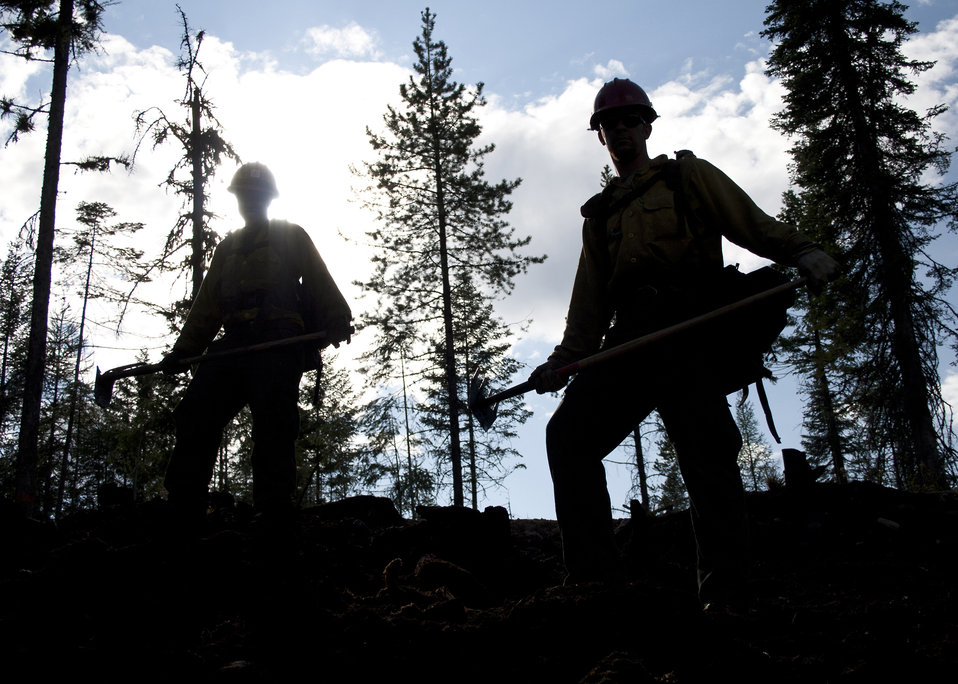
Firefighters supported by three fire engines, two helicopters, two water tenders, a dozer and an air tanker battled to contain the 90 acre Rogers Fire located on Mt. Rogers five miles west of Aladdin, WA on the Colville National Forest. Firefighters worked under adverse conditions with steep terrain and gusting winds to reduce the loss of timber and protect the Rogers Mountain Trail. The Rogers Fire began on Aug. 9, 2011 and was controlled by Aug. 19, 2011 with mop up crews ensuring that no flare-ups occurred. Colville National Forest has 1.1 million acres in northeastern Washington and includes the Kettle River, Selkirk Mountain ranges, and the upper reaches of the Columbia River.